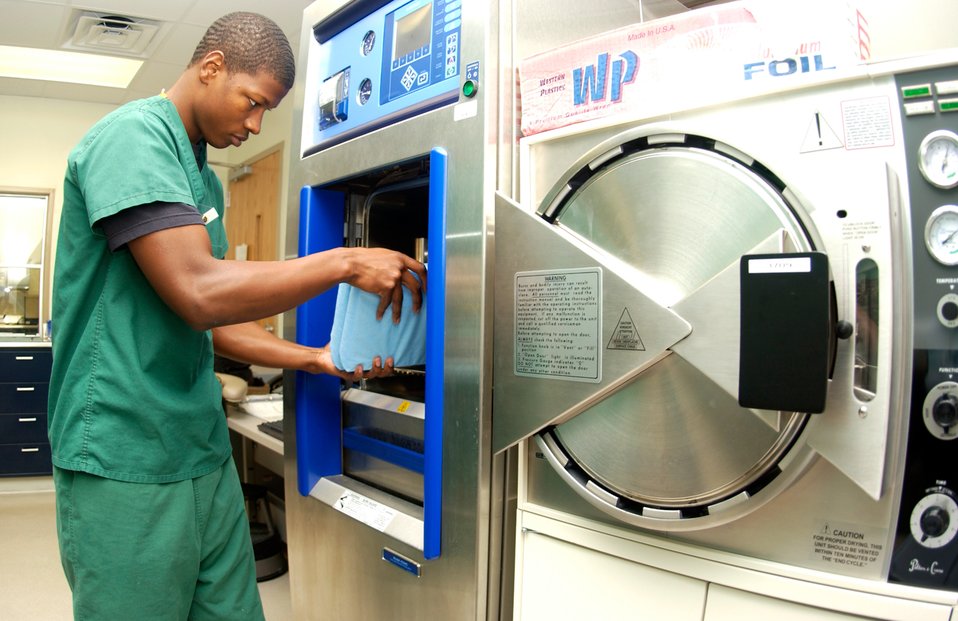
Andersen small dental clinic of the year

Airman 1st Class Eric Digby sterilizes dental equipment. He is a 36th Medical Operations Squadron dental technician.